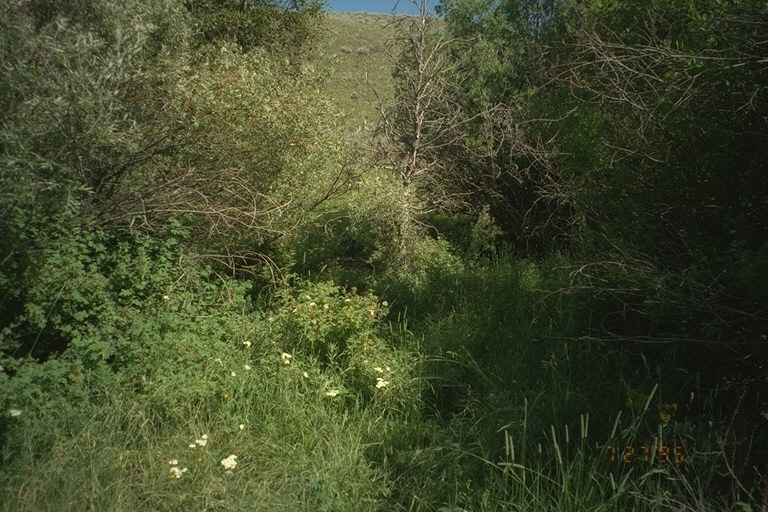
Riparian area Public Lands Salmon Field Office UCSC Upper Columbia Salmon Clearwater District